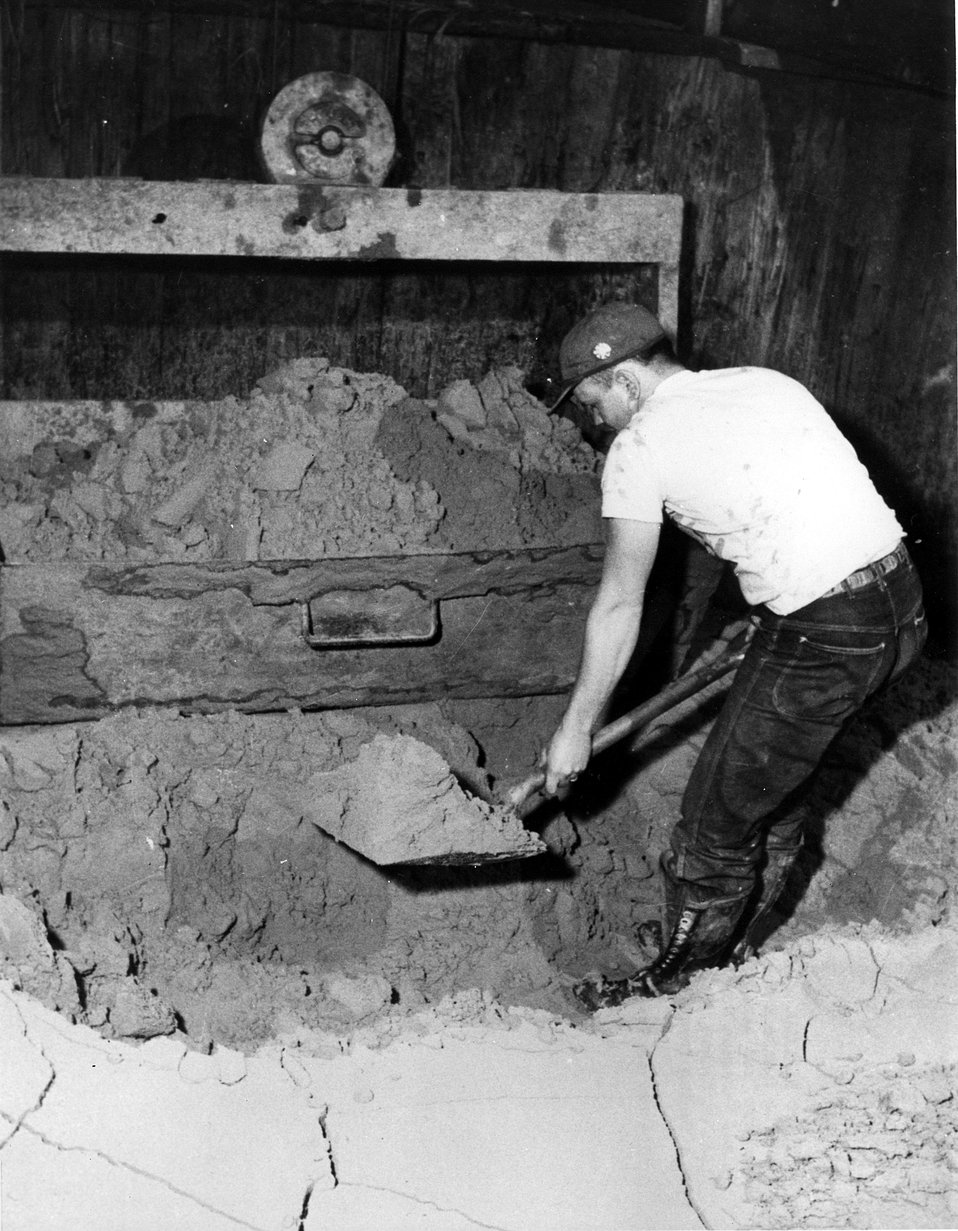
A processing mill employee, standing inside a washing tank, is shoveling vanadium 'red cake' into a bucket at the Unites States Vanadium Company uranium ore-treatment plant at Uravan, Colorado. c. 1955